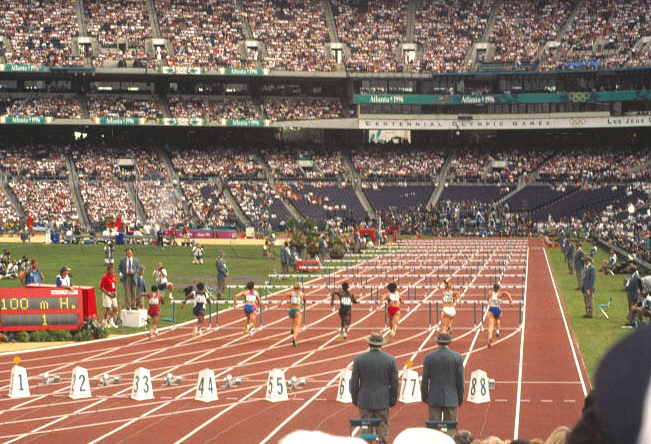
1996 Atlanta Olympics--track and field.